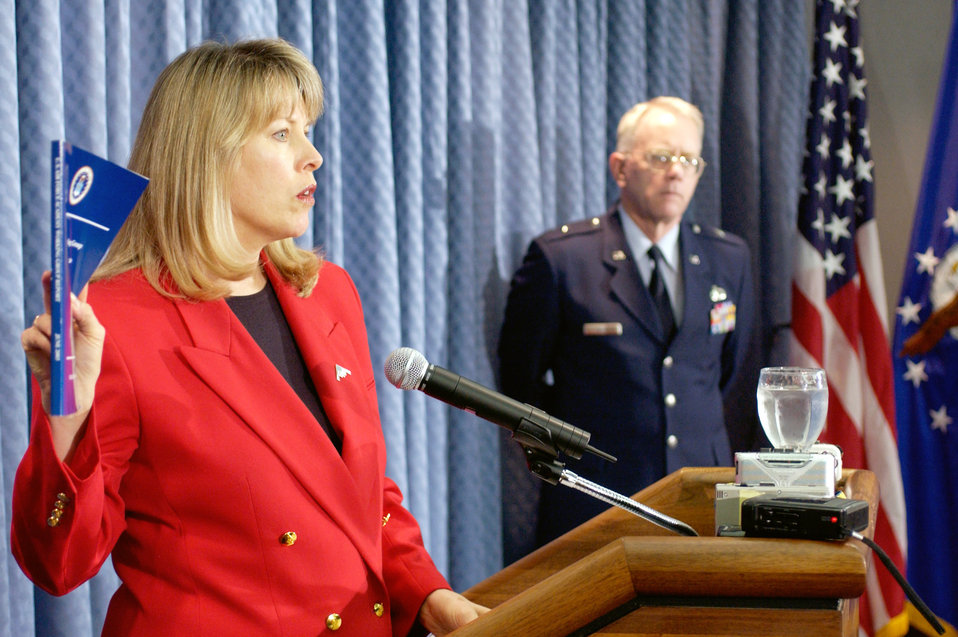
U.S. Air Force Academy report

WASHINGTON -- Air Force General Counsel Mary L. Walker (left) holds a copy of the report on the U.S. Air Force Academy sexual misconduct study released June 19 during a press briefing here. She is joined by Brig. Gen. Ron Rand, director of Air Force public affairs.